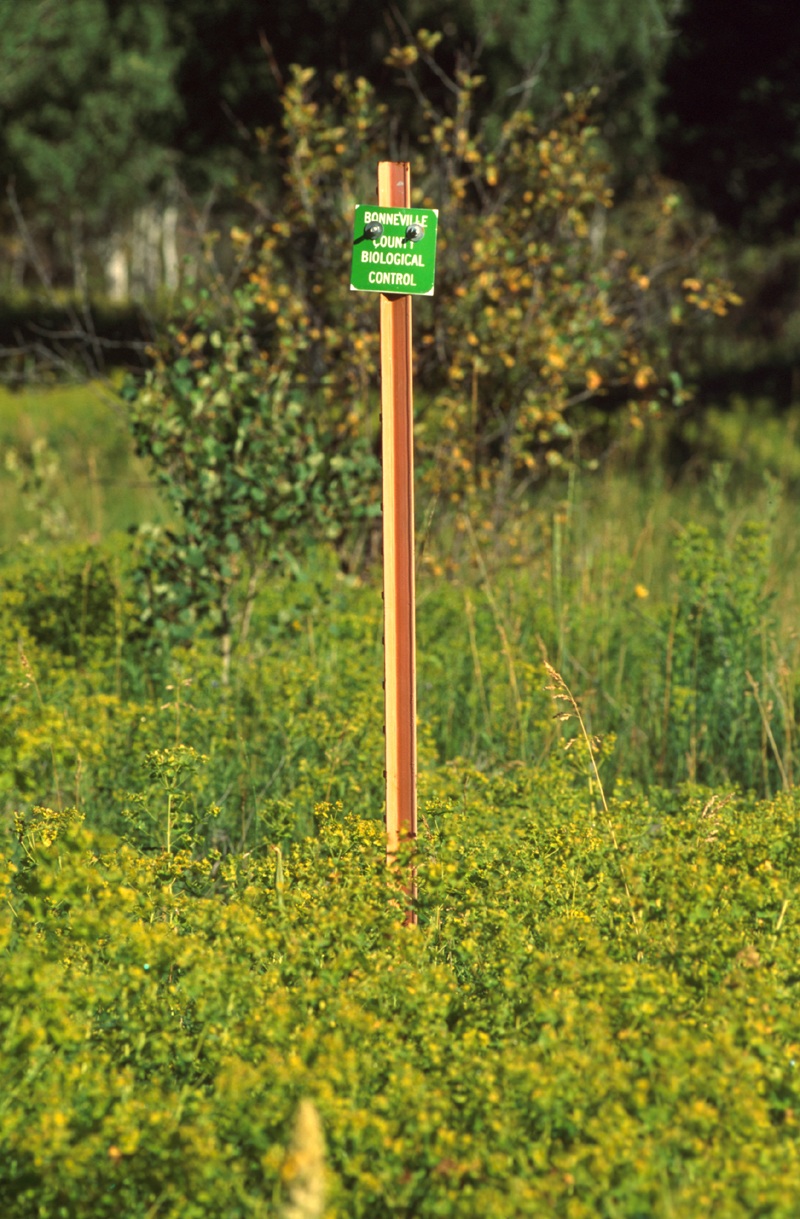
South Fork of the Snake River